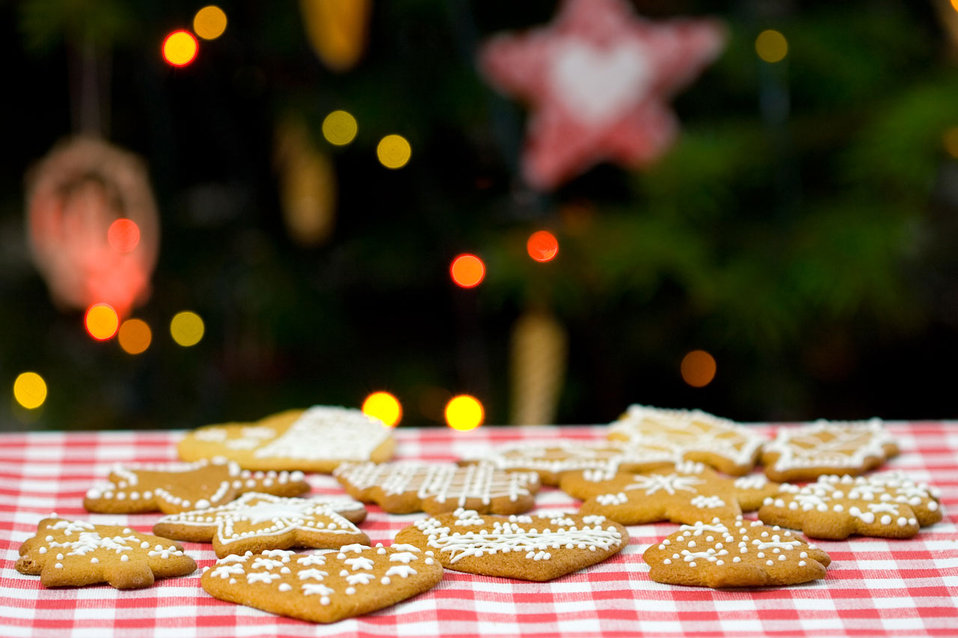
Christmas biscuits on the table with a christmas tree in the background.